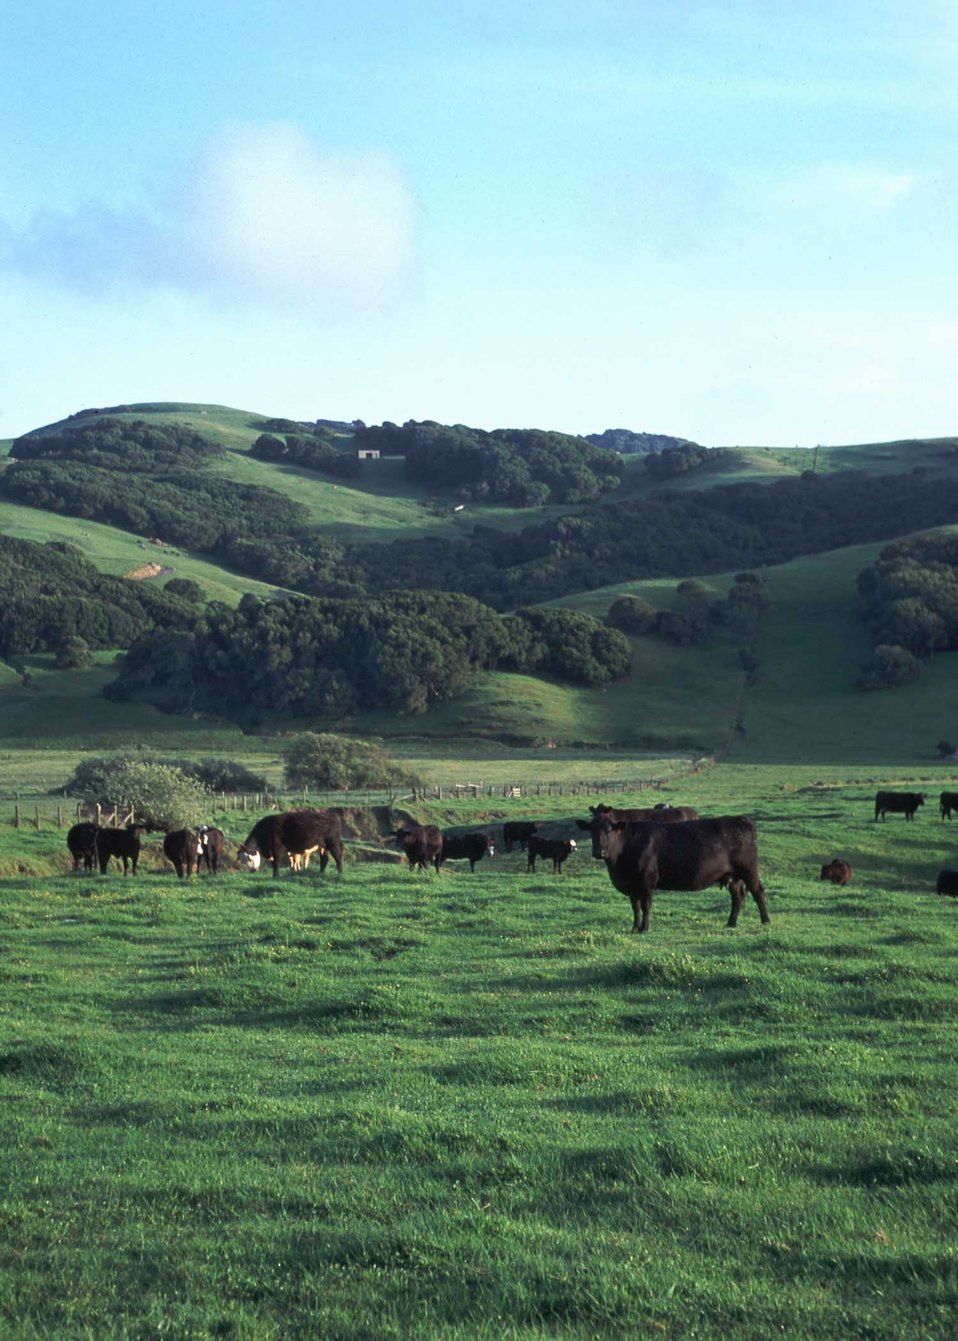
Cows in Sonoma County, CA.